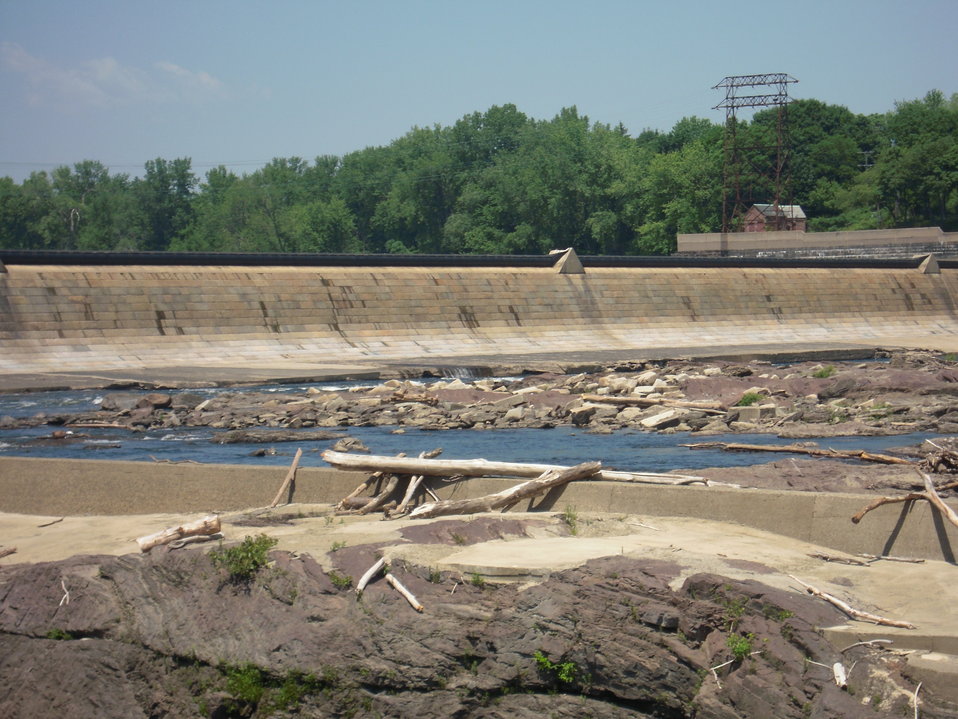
Holyoke Dam